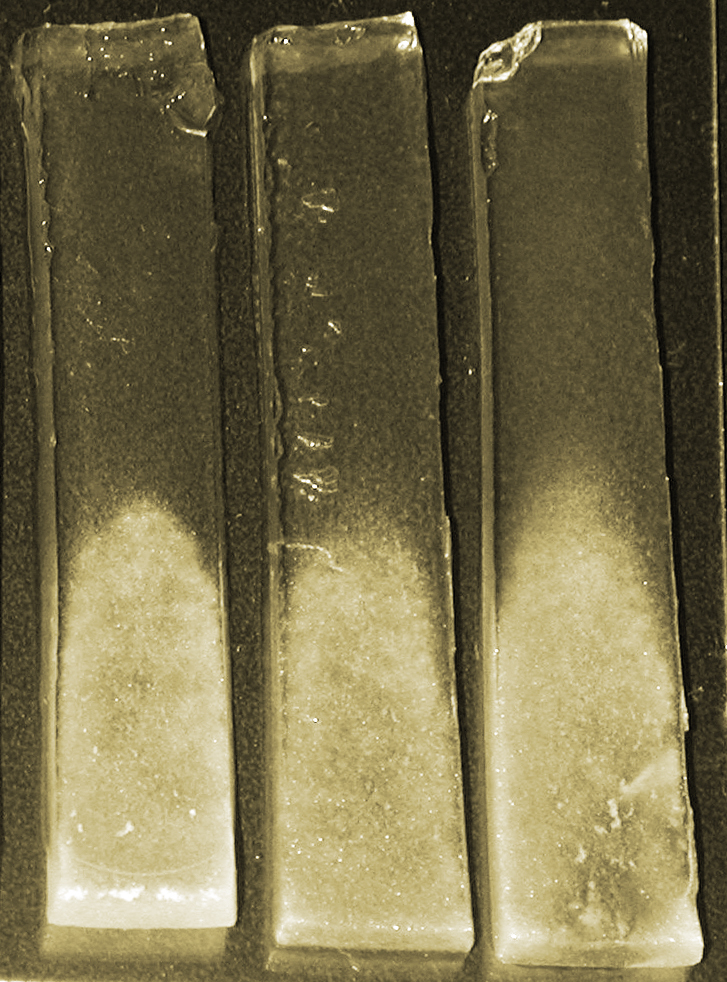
Hydrogel

Experimental hydrogel scaffolds prepared at NIST for culturing bone cells clearly show the dependence of bone mineralization on the stiffness of the gel. Deposited minerals are denser at the bottoms of the gradient gels, which are progressively stiffer from top to bottom. Strips are approx. 1 X 6 cm. (Color added for emphasis.)